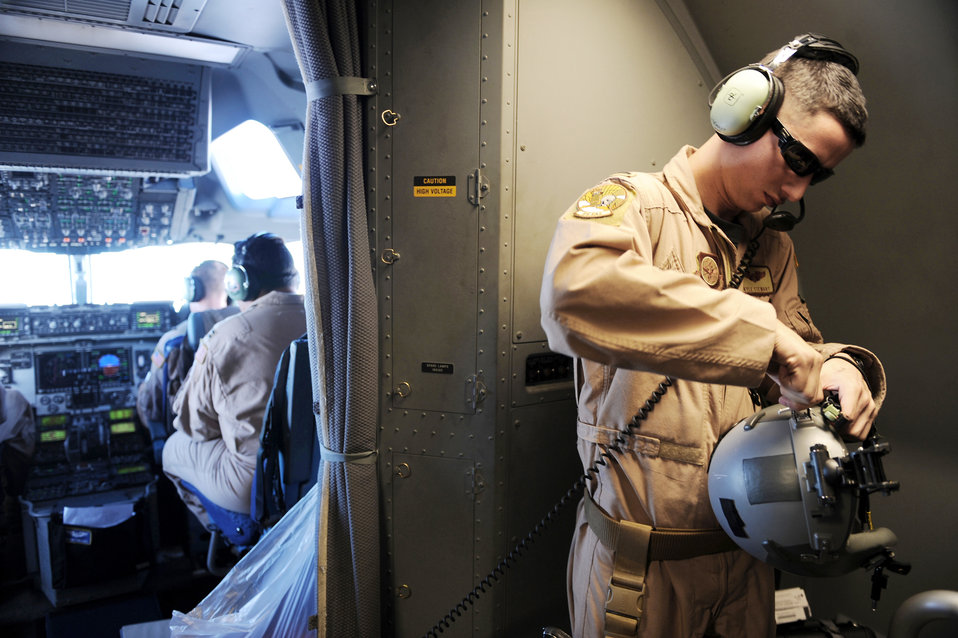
Combat air delivery over Afghanistan

First Lt. Kyle J. Stewart prepares his flight helmet during a cargo transportation mission to Afghanistan, Feb. 1, 2010, over Southwest Asia. Pilots plan and prepare for missions, brief other aircrew members and ensure aircraft are ready. Lieutenant Stewart is a C-17 Globemaster III pilot assigned to the 816th Expeditionary Airlift Squadron.